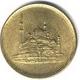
Egyptian coin